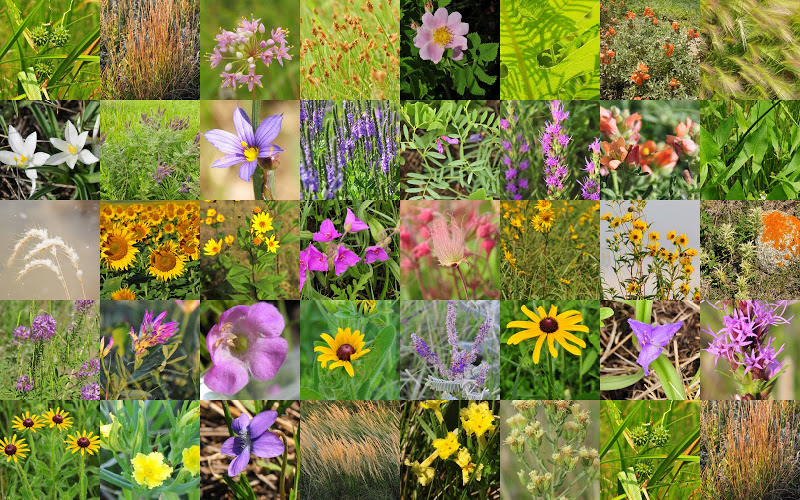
Prairie Quilt

A prairie quilt of photos of grasses, sedges, and forbs from North Dakota, South Dakota, Nebraska, and Kansas.